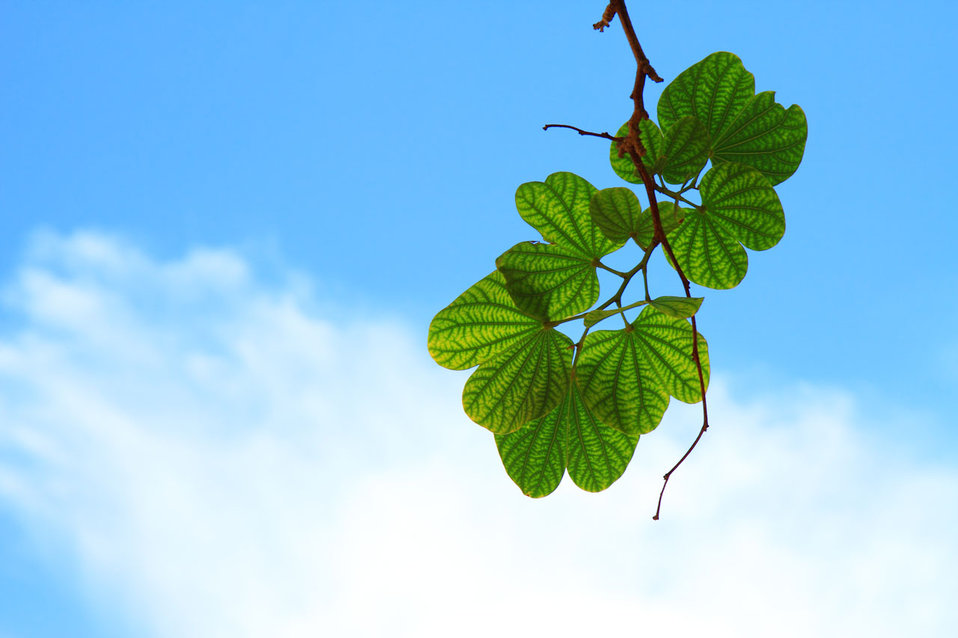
Backlit leaves and sky

Green leaves against blue sky.